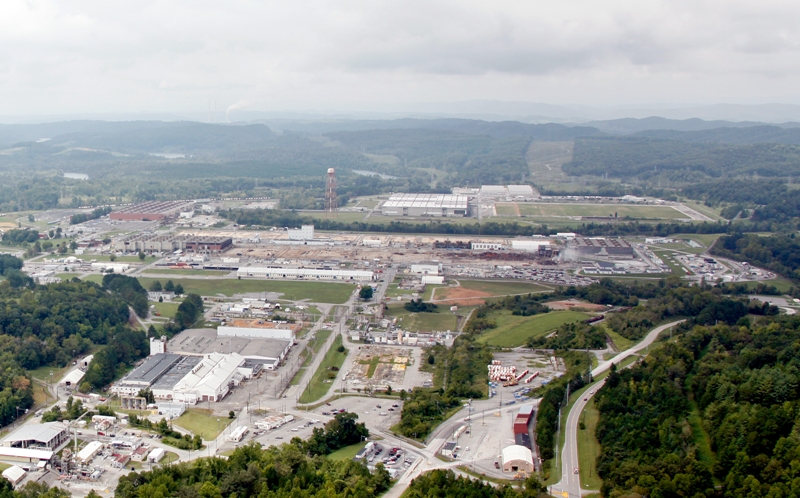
East Tennessee Technology Park

September, 2012

Aerial photo of Oak Ridge’s East Tennessee Technology Park. The former uranium enrichment complex is undergoing demolitions and cleanup to become a privately owned and operated industrial park.